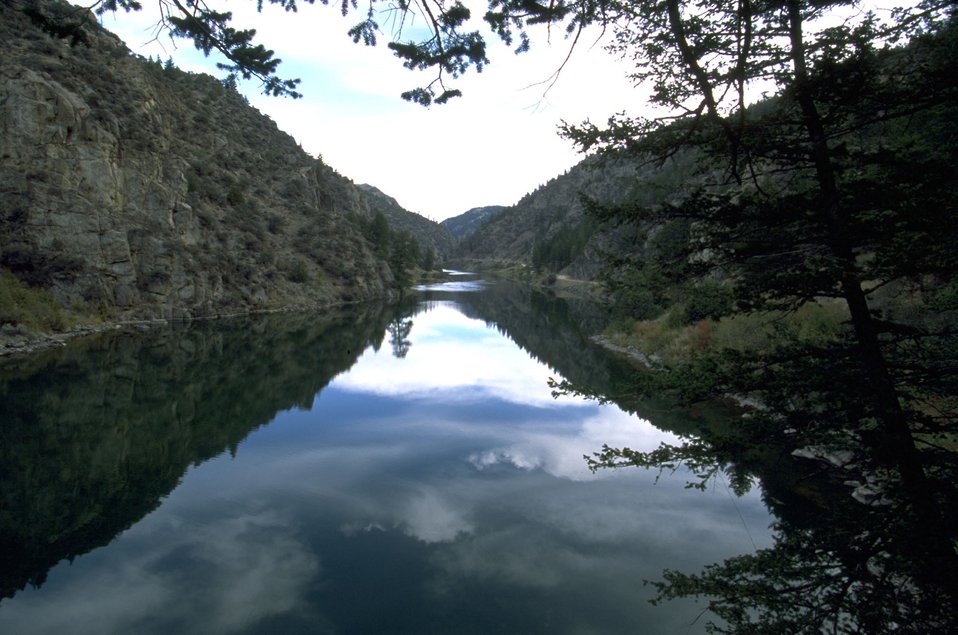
Backwaters of Madison Dam between dam and Ennis Lake.